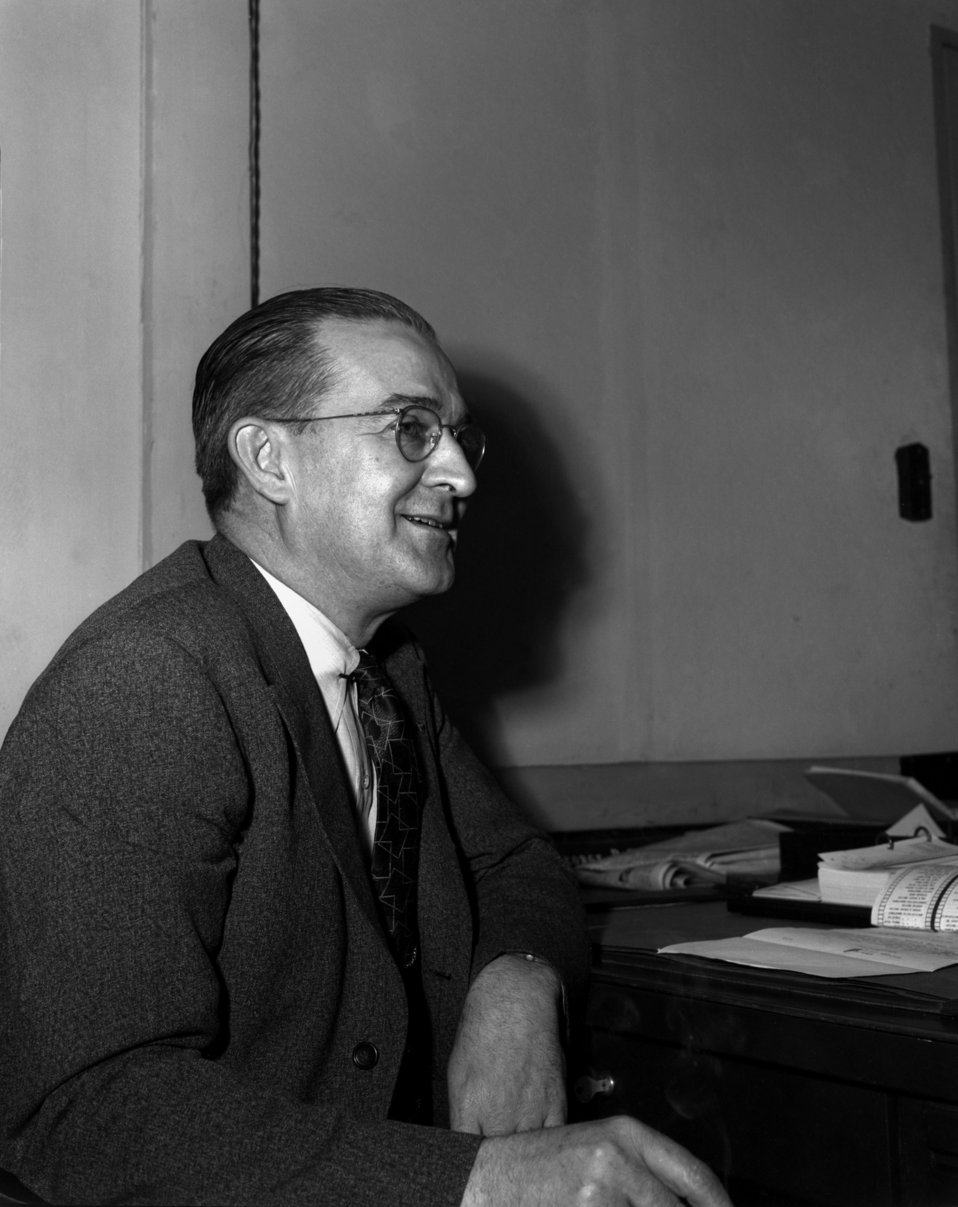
George Turner Oak Ridge

3273-1 DOE photo by Ed Westcott 1-31-1947 Oak Ridge Tennessee